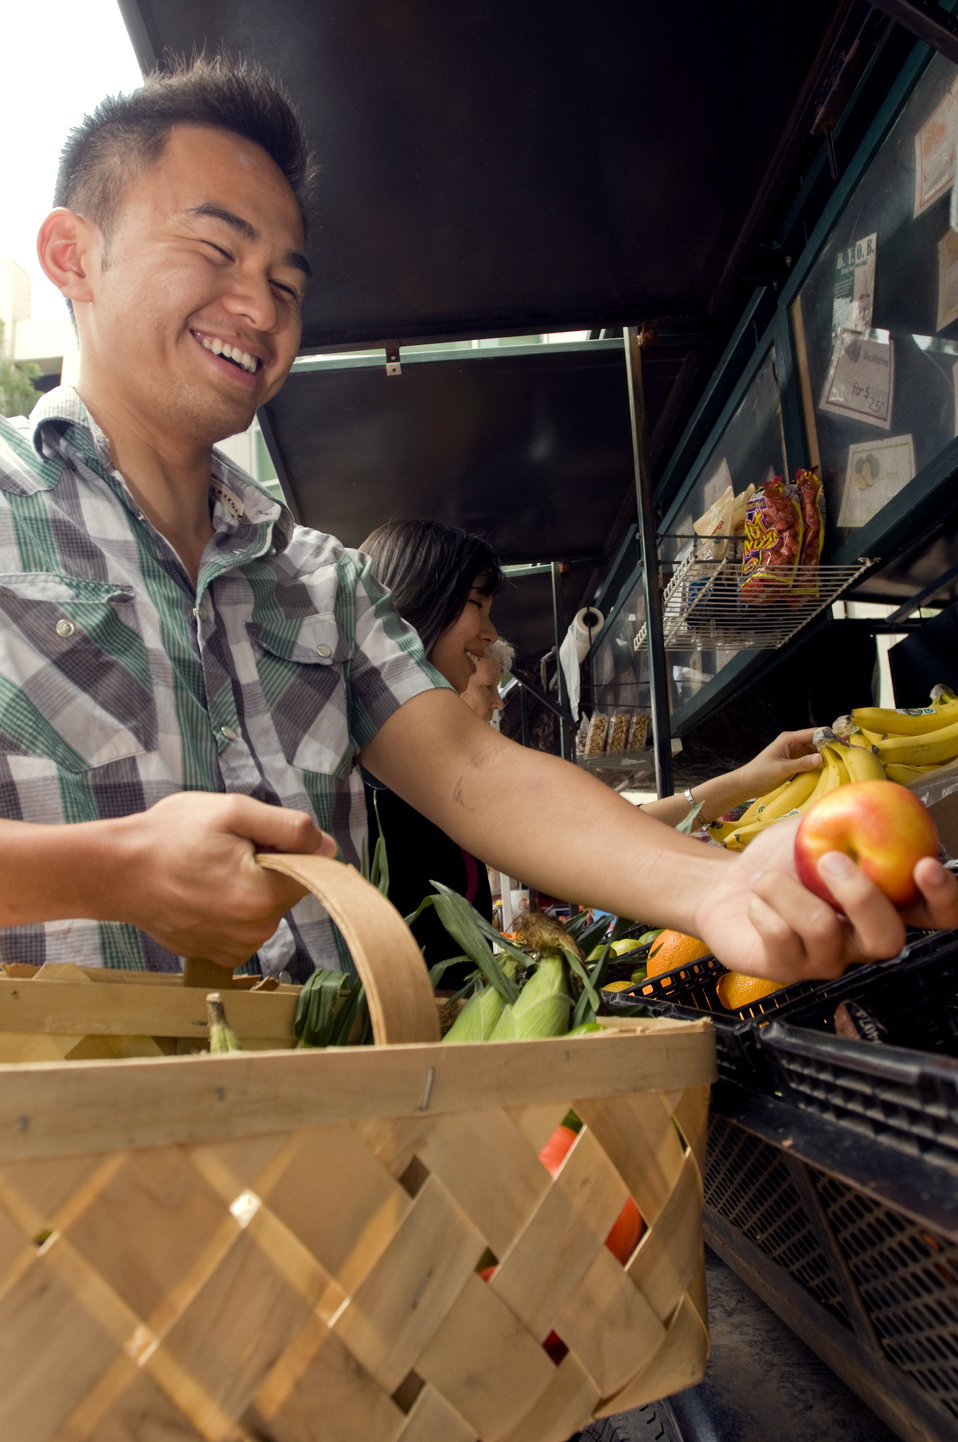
This smiling man was photographed as he was shopping for groceries at a mobile Georgian farmers market at a point in his activity where it appears he'd made his choice in a red-orange nectarine, which had been extracted from a plastic basket of these fruits, in the market's produce section.